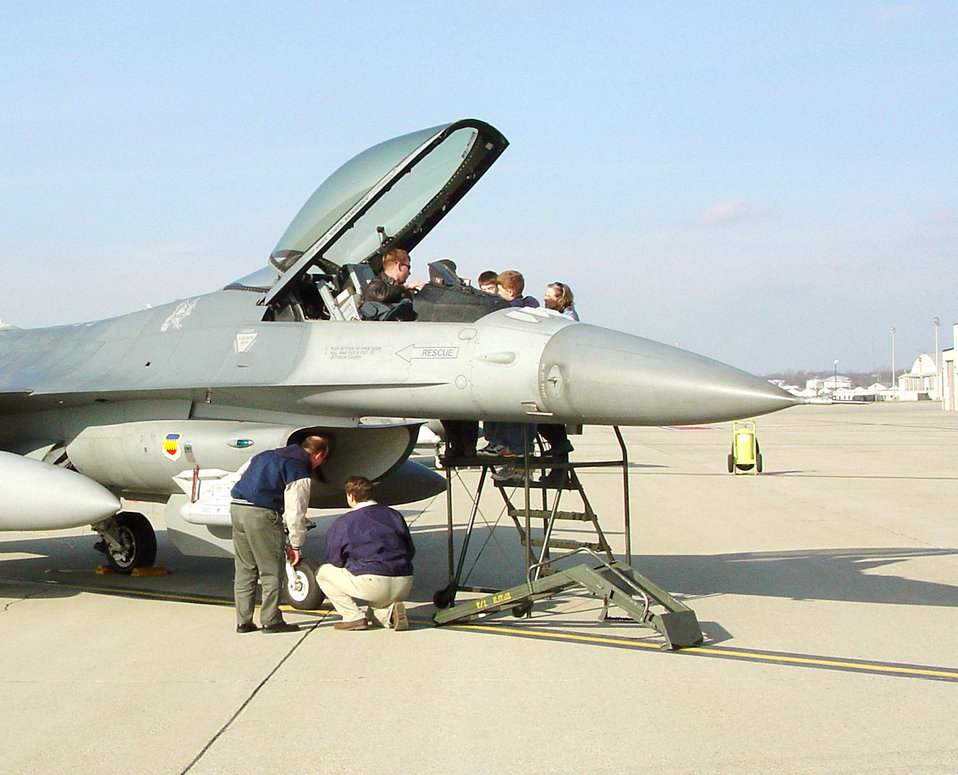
Pilots give feedback on F-16 upgrade

WRIGHT-PATTERSON AIR FORCE BASE, Ohio - A newly modified F-16 Fighting Falcon sits on display here for Aeronautical Systems Center's F-16 Systems Group members and their families. Capt. Jim Govin gave feedback on recent Common Configuration Implementation Program upgrades to the aircraft. He is an F-16 pilot from the 55th Fighter Squadron at Shaw AFB, S.C.